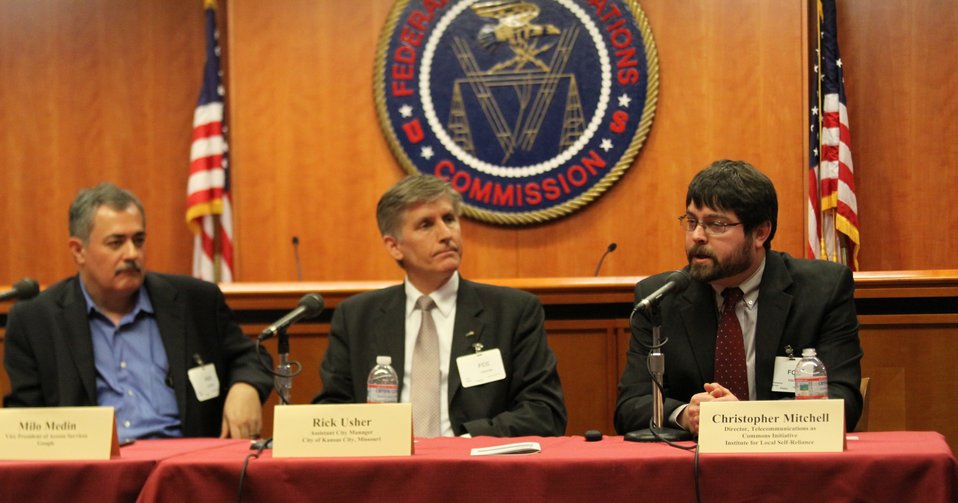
March 27, 2013 Gigabit City Challenge: Broadband Networks Workshop Panel 4: Leveraging Local Tools